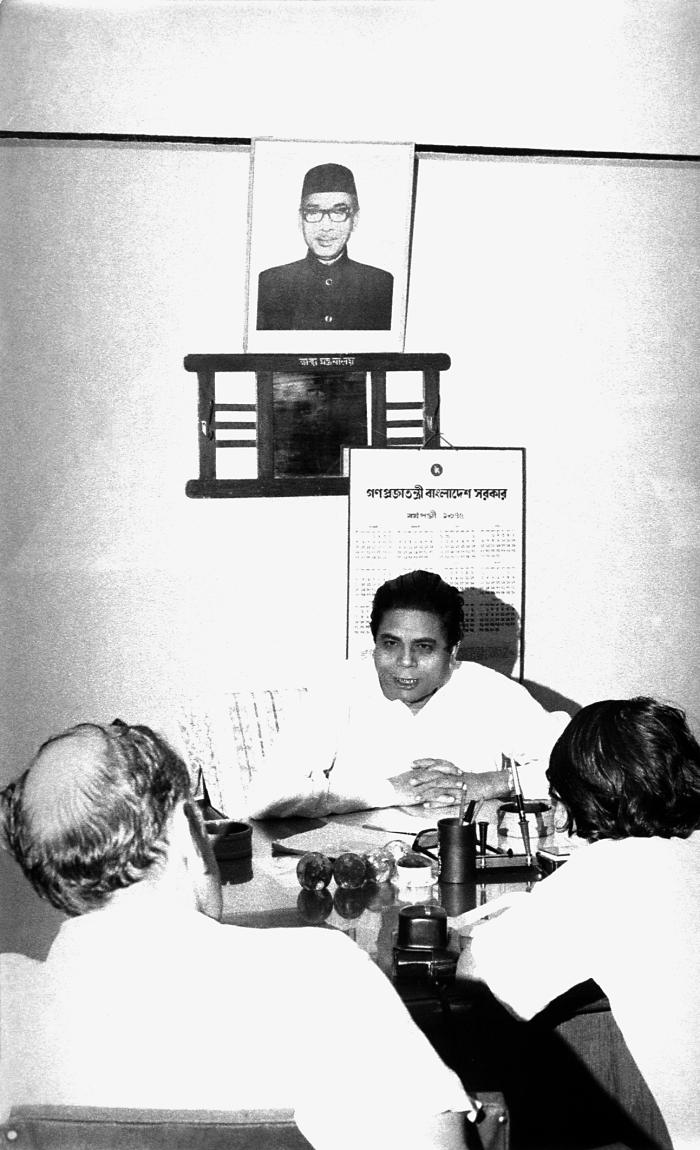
Though his name is unknown, this 1975 photograph depicted one of the Bangladesh Secretaries of Health, as he was seated behind his desk during a meeting with members of the smallpox eradication campaign. Integral to the success of the eradication efforts in Bangladesh, was convincing the governmental hierarchy of the need to carry out such a monumental undertaking on a country-wide scale, which at times was initially met with skepticism, but with the actualization of positive results, was soon adopted by all as the one and only way to finally rid Bangladesh, and for that matter, the entire world of this dreaded virus.